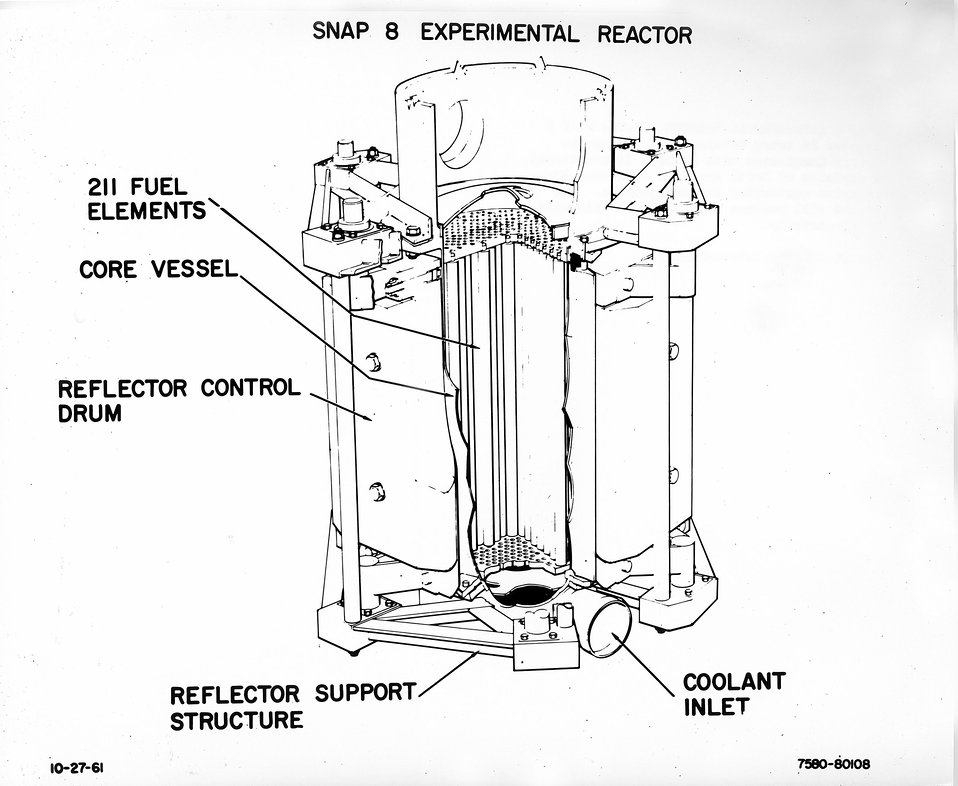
The SNAP 8 reactor is being developed by the Atomic Energy Commission with Atomic International. The system will produce from 30 to 60 kilowatts of electricity.